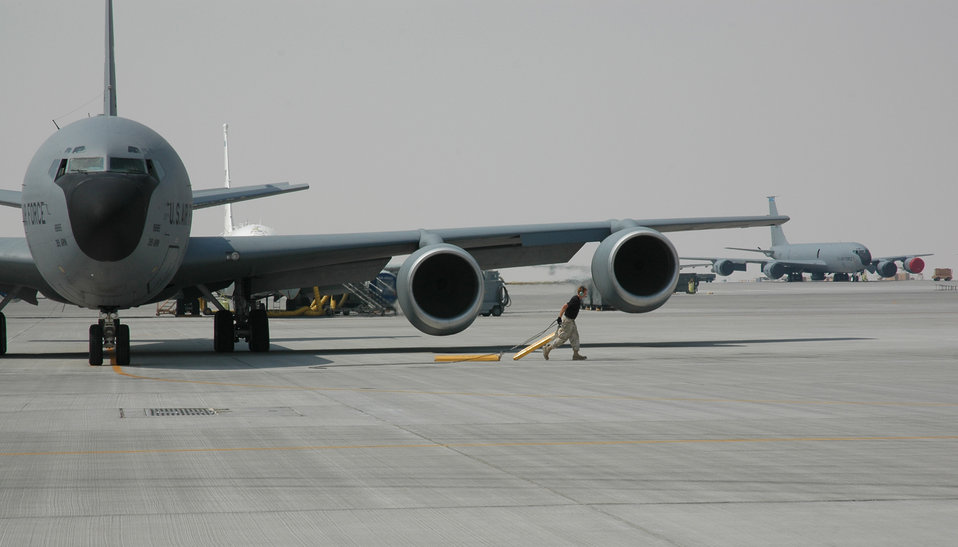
Airpower Summary for June 13, 2007

A maintainer pulls the chocks as an Air Force KC-135 Stratotanker prepares to depart on a refueling mission over Southwest Asia. Coalition tanker aircraft flew 48 sorties June 12 and refueled 242 aircraft.